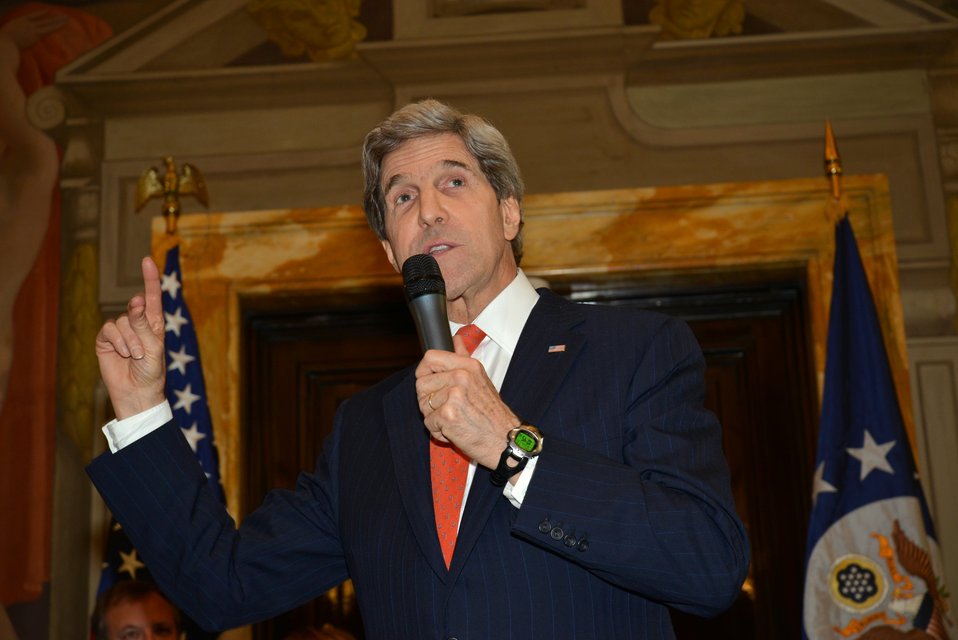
Secretary Kerry Speaks With Tri-Mission Rome Staff and Families

U.S. Secretary of State John Kerry speaks with staff and families of Tri-Mission Rome -- the U.S. Embassy in Rome, Italy; the U.S. Embassy to the Holy See; and the U.S. Mission to the UN Agencies -- in Rome, Italy, on February 28, 2013.